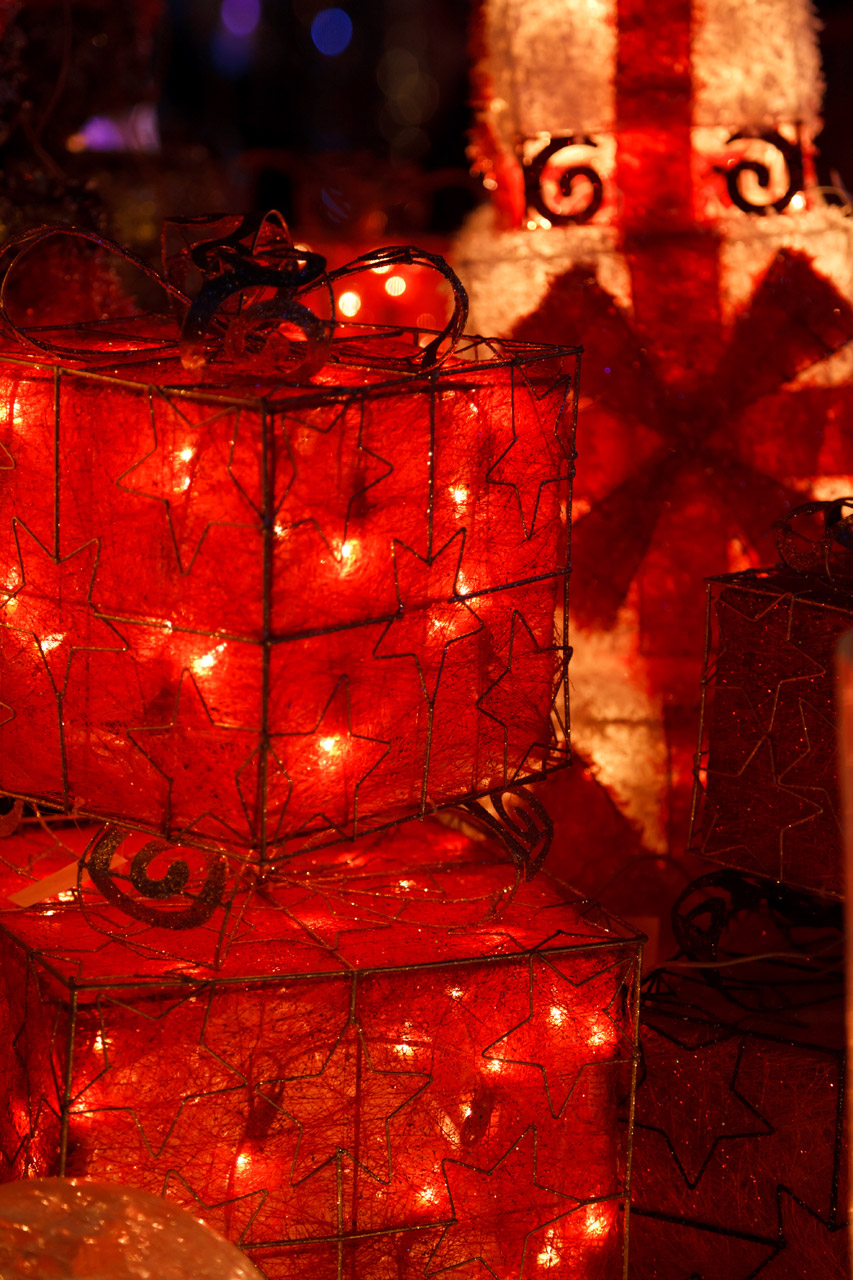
Christmas light boxes

Christmas lights as presents.